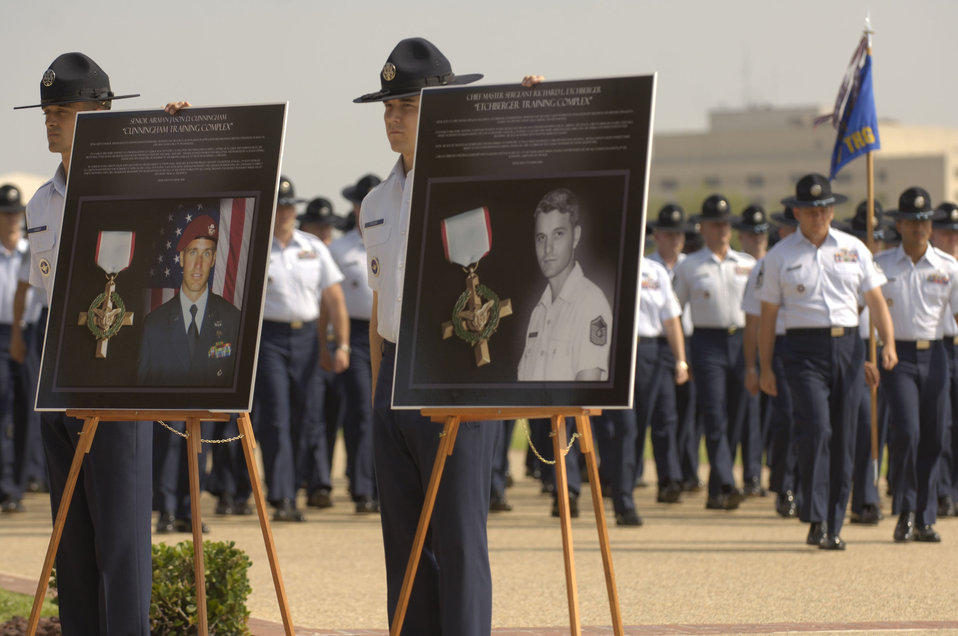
Lackland honors nine enlisted heroes

Military training instructors stand by photographs of Senior Airman Jason Cunningham and Chief Master Sgt. Richard Etchberger. They and seven other Airmen were memorialized in a Basic Military Training Memorialization Ceremony at Lackland Air Force Base, Texas, on Wednesday, June 14. Several hundred people witnessed the ceremony that dedicated nine training facilities in honor of nine enlisted heroes who have served from World War II to present-day operations in the war on terrorism.